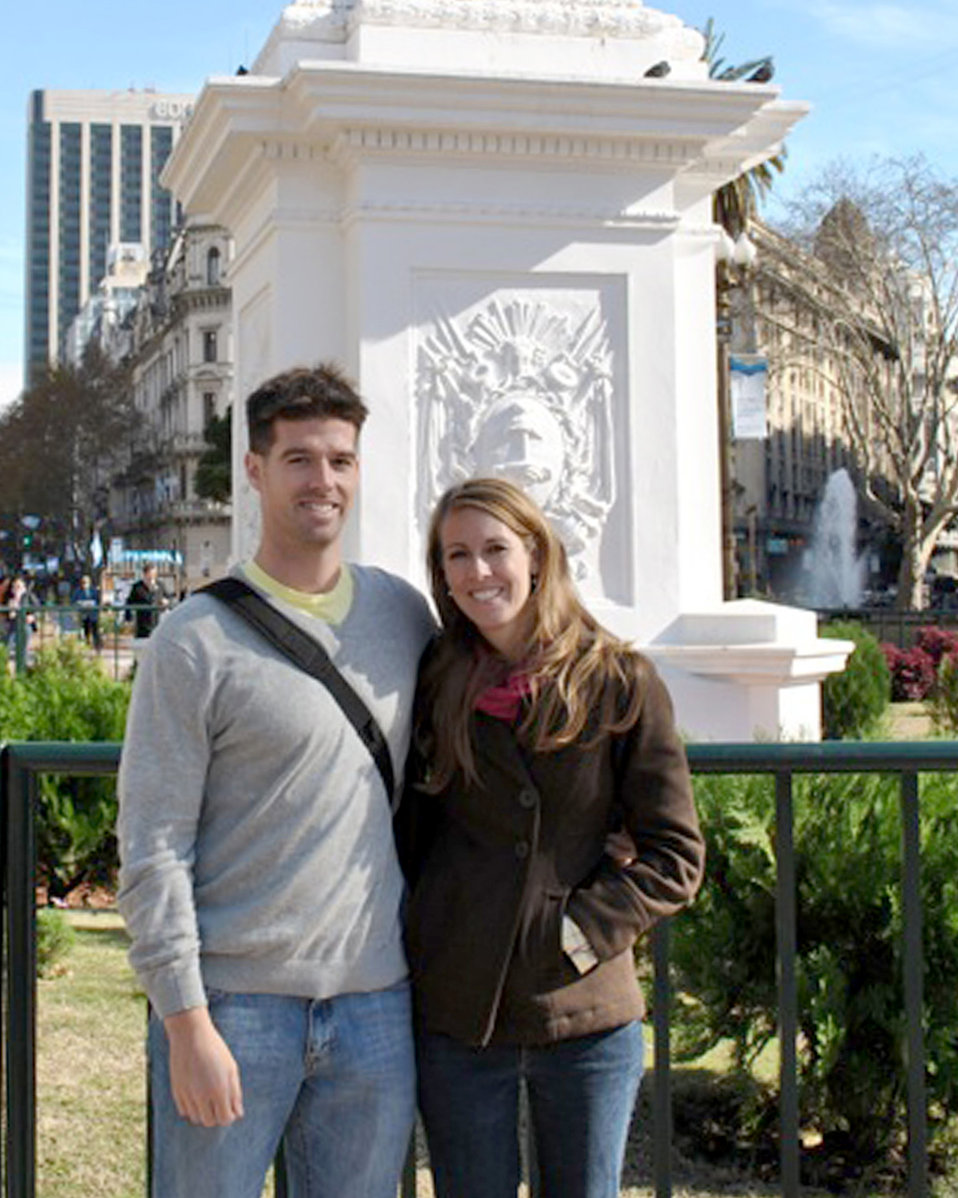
Olstead Scholar Program

During a recent visit to Buenos Aires, Argentina, Maj. Sean Baerman and his wife, Mandy, familiarized themselves with their soon-to-be new city. The major was one of 17 military officers selected by the George and Carol Olmsted Foundation to be a student in Olmsted Scholar Class of 2011. The couple, along with their three-year-old son Teague, will spend the next few years living in Buenos Aires as Major Baerman completes a Masters of International Relations at the University of Belgrano.